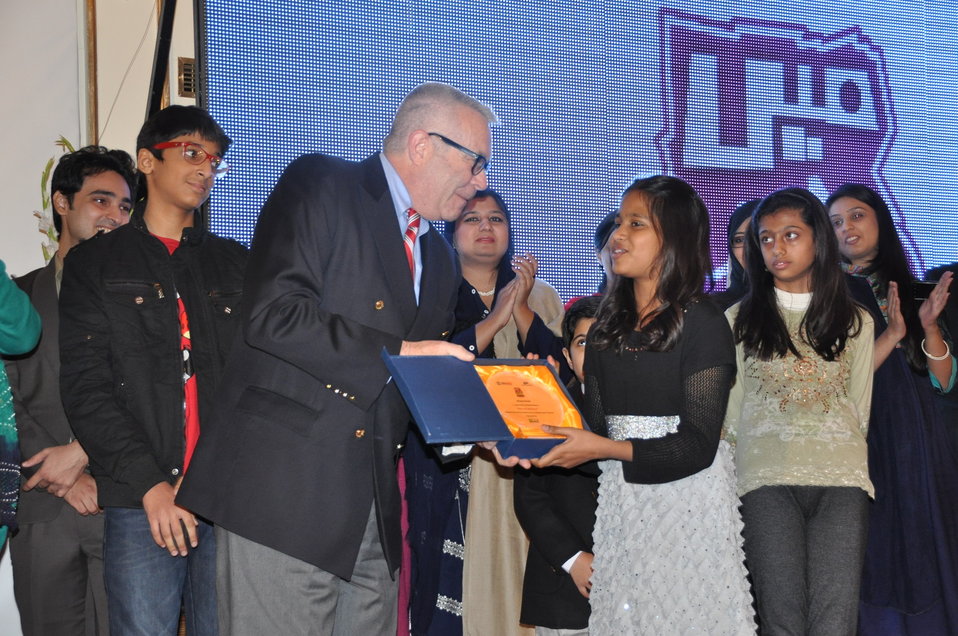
U.S. Deputy Chief of Mission Ambassador Richard Hoagland presenting memento to an attendee